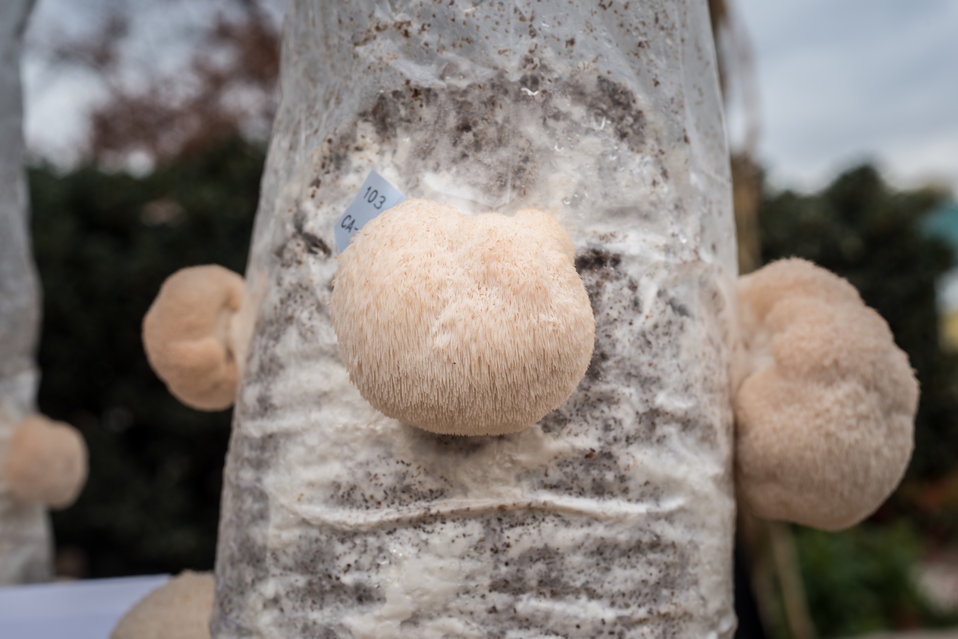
Pom pom (egg shaped) mushrooms growing from a plastic wrapped sawdust growing log, on display at the U.S. Department of Agriculture (USDA) farmers markets and Harvest Festival at the USDA Whitten Building east parking lot in Washington, DC, on Friday, November 22, 2013.